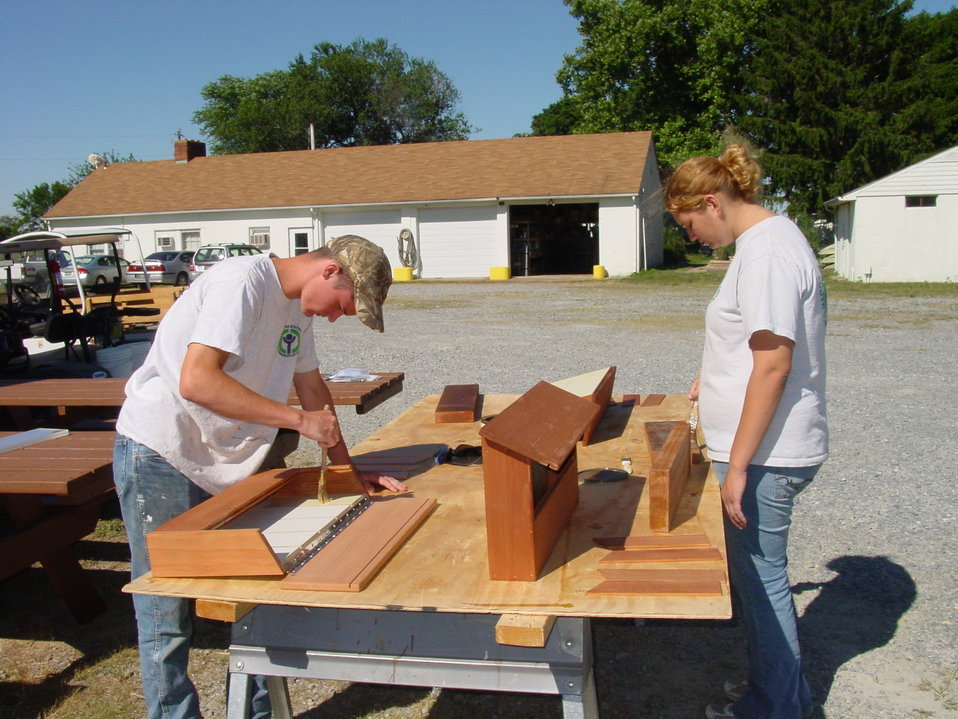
Constructing kiosks

YCC crew member build a kiosk at Bombay Hook National Wildlife Refuge.